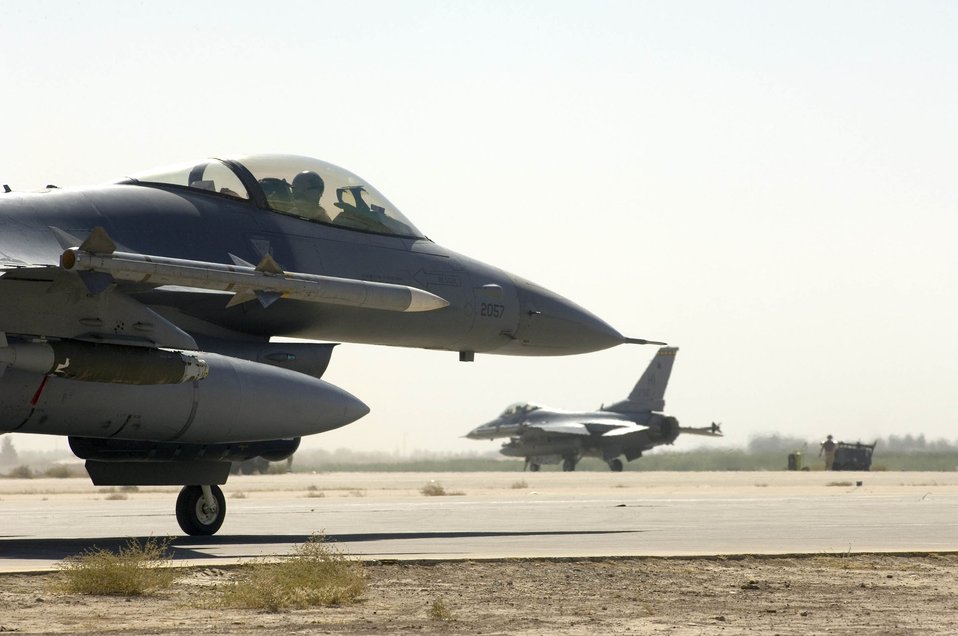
Fighting Falcon

BALAD AIR BASE, Iraq (AFPN) -- F-16 Fighting Falcons taxi toward the end of runway inspection area here. The aircraft are currently supporting Operation Iraqi Freedom. The F-16 Fighting Falcon is a compact, multi-role fighter aircraft. It is highly maneuverable and has proven itself in air-to-air combat and air-to-surface attack. It provides a relatively low-cost, high-performance weapon system for the United States and allied nations.